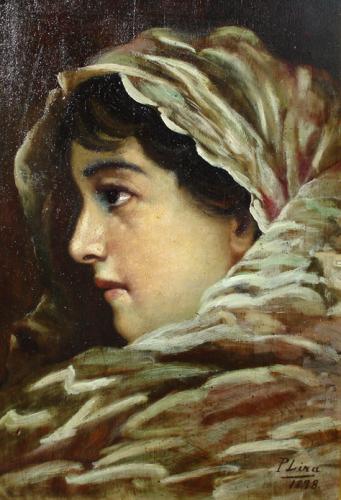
'Cabeza de mujer'